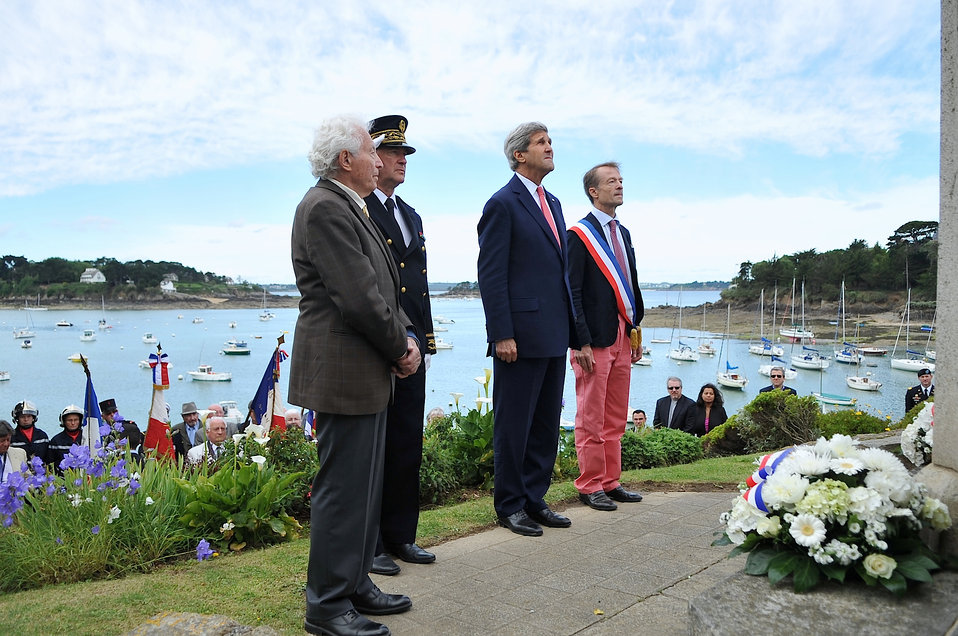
Secretary Kerry, Brittany Officials, Photographer Vaccaro Pay Tribute to American WWII Victims

World War II photographer Tony Vaccaro, Prefect Patrick Strzoda, U.S. Secretary of State John Kerry, and Mayor Vincent Denby-Wilkes listen to the playing of national anthems after they laid wreathes at a memorial in Saint Briac, France, on June 7, 2014, to recall three Americans who died in 1944 liberating the Brittany town from Nazi occupiers.